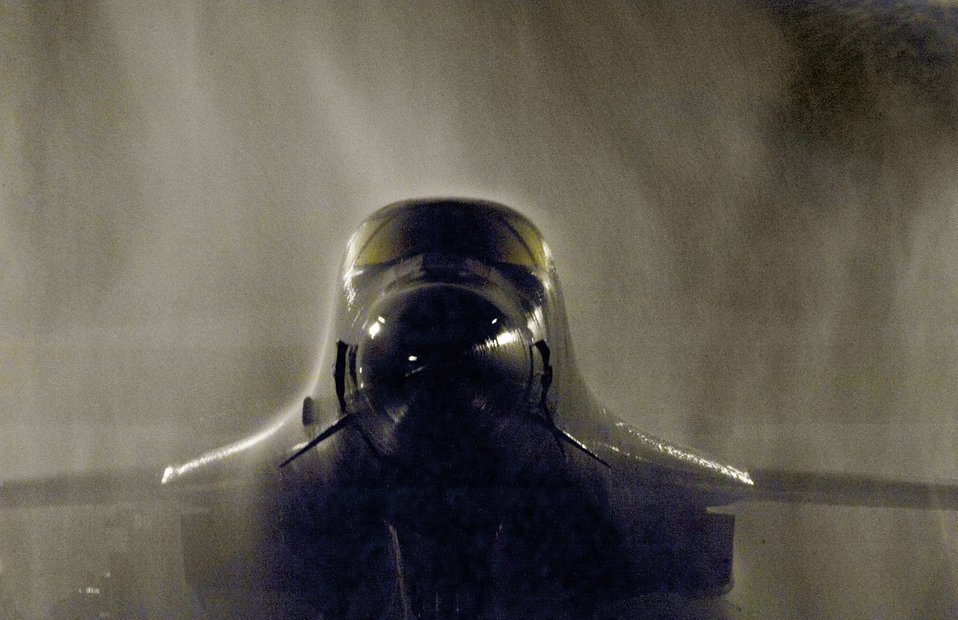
Ready for my close-up

A B-1B Lancer gets a